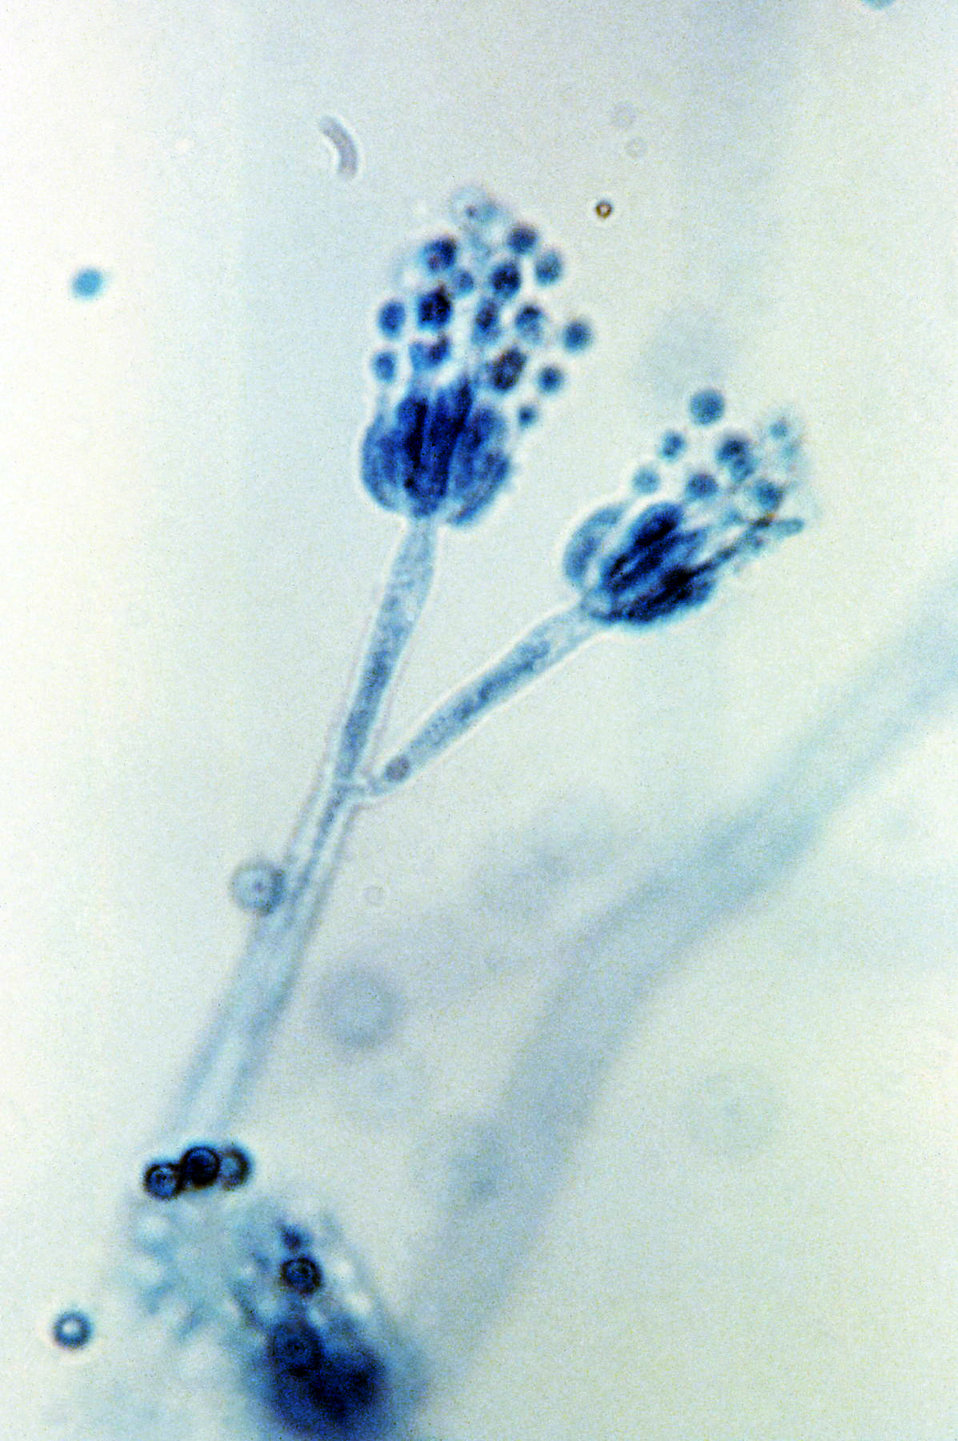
Magnified at 1200x, this 1971 photomicrograph depicted two conidiophores of a Penicillium glabrum fungus. The fungal conidiophore is a stalked structure, the distal end of which produces the asexual spores, known as conidia, through a process of budding.